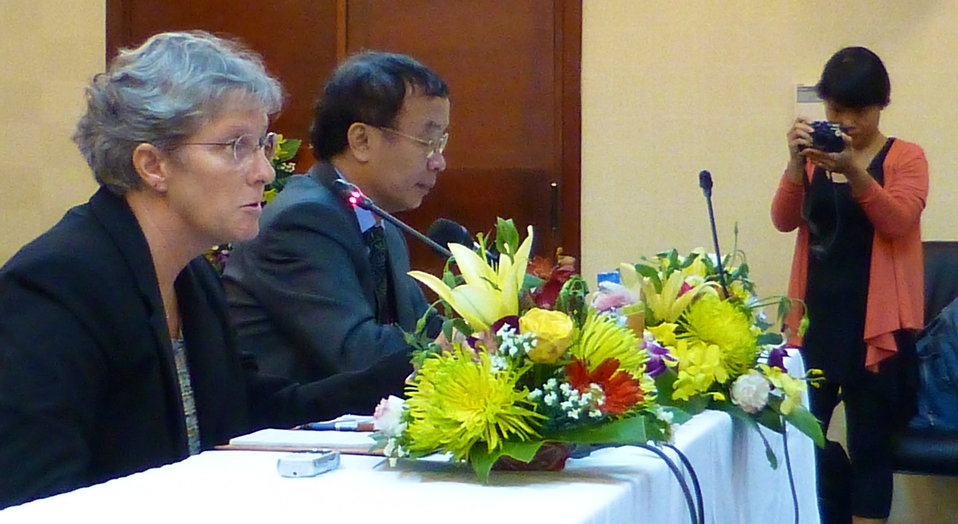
Press Conference at the 7th Joint Advisory Committee Meeting in Hanoi

Hanoi, September 21, 2012